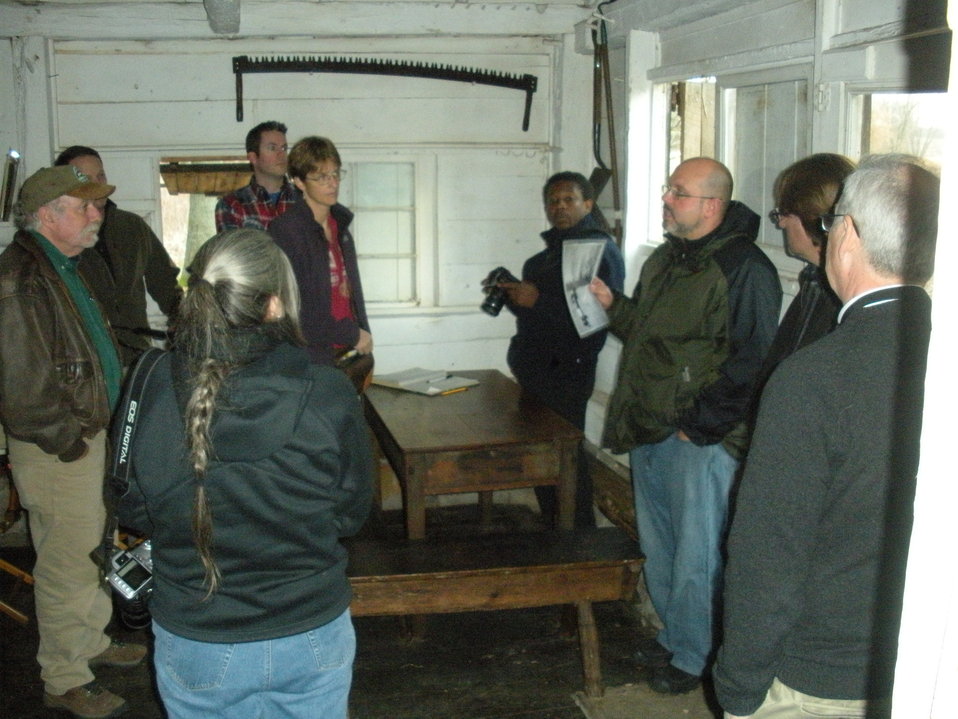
Inside the Shack